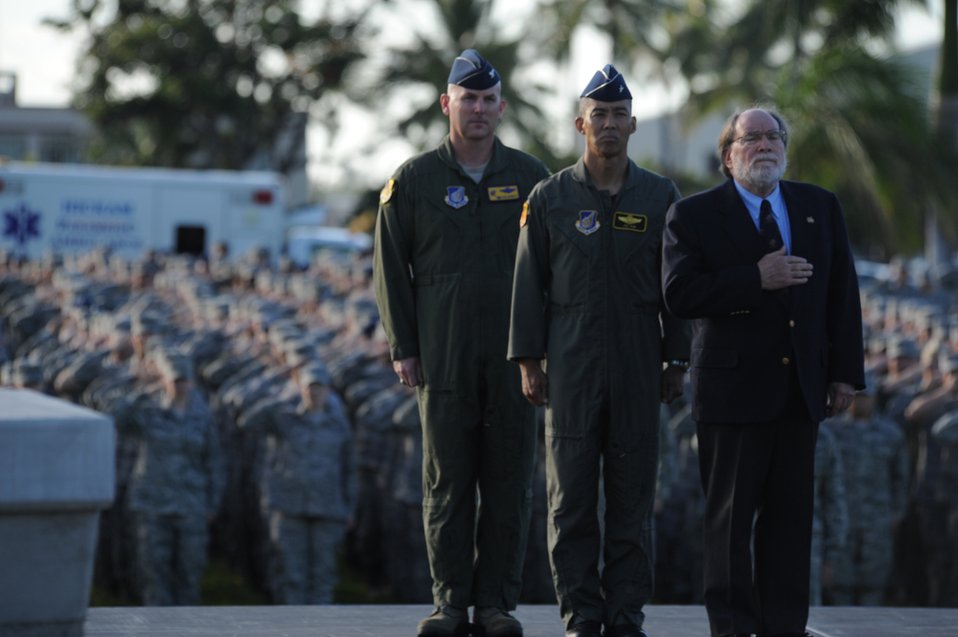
9/11 ceremony at Joint Base Pearl Harbor-Hickam, Hawaii

Neil Abercrombie, Brig. Gen. Joseph Kim and Col. Sam Barrett observe a moment of silence as active-duty, Guard and Reserve Airmen gathered Sept. 9, 2011, for a 9/11 tribute ceremony at Joint Base Pearl Harbor-Hickham, Hawaii. Abercrombie is the governor of Hawaii, Kim is the Hawaii National Guard deputy adjutant general and Barrett is the 15th Wing commander.